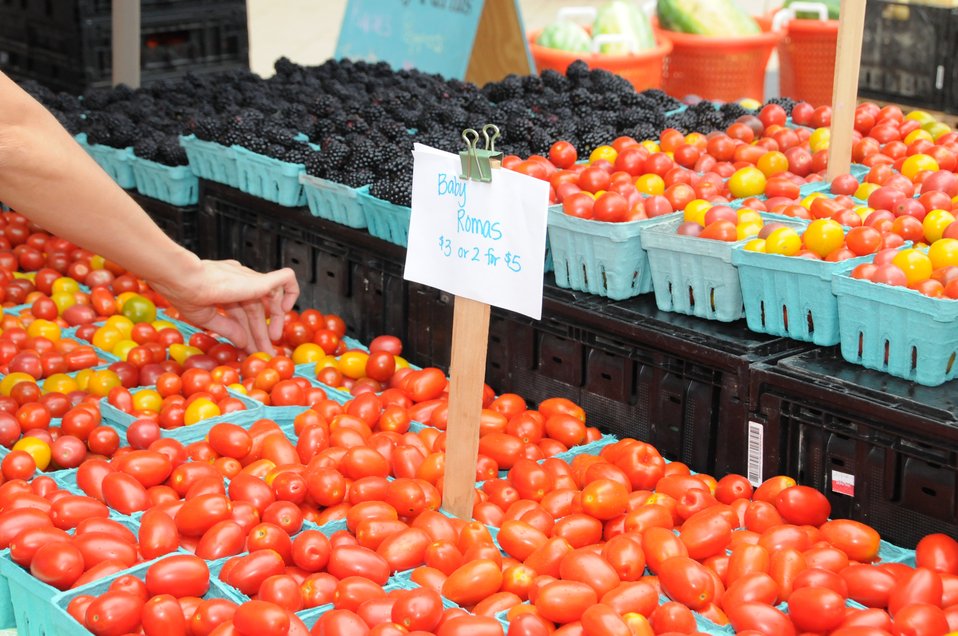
Baby Roma Tomatoes

Baby Romas at the Columbia Heights Community Marketplace.